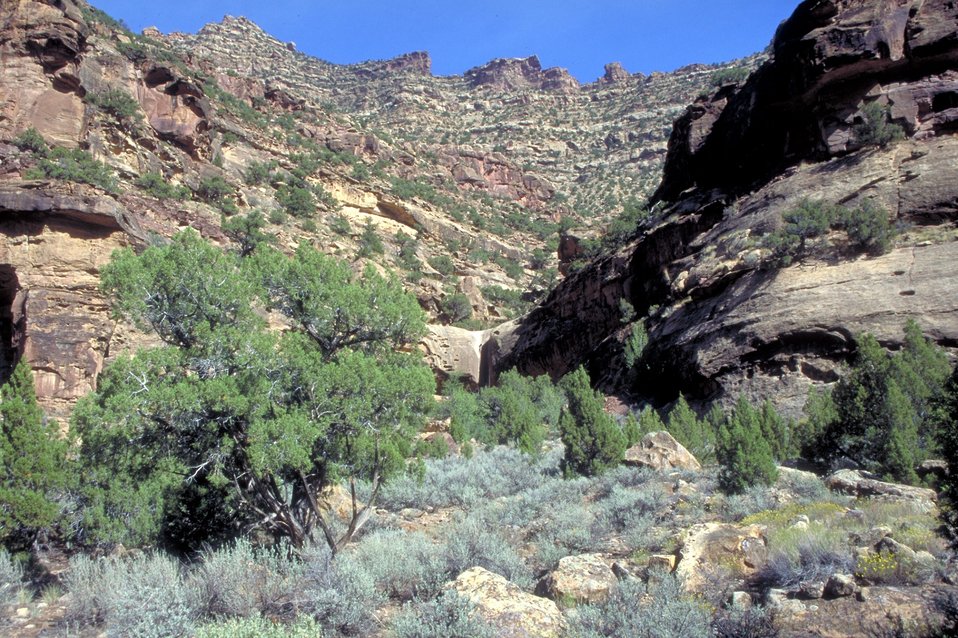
Desolation/Gray Canyons near Price, Utah.